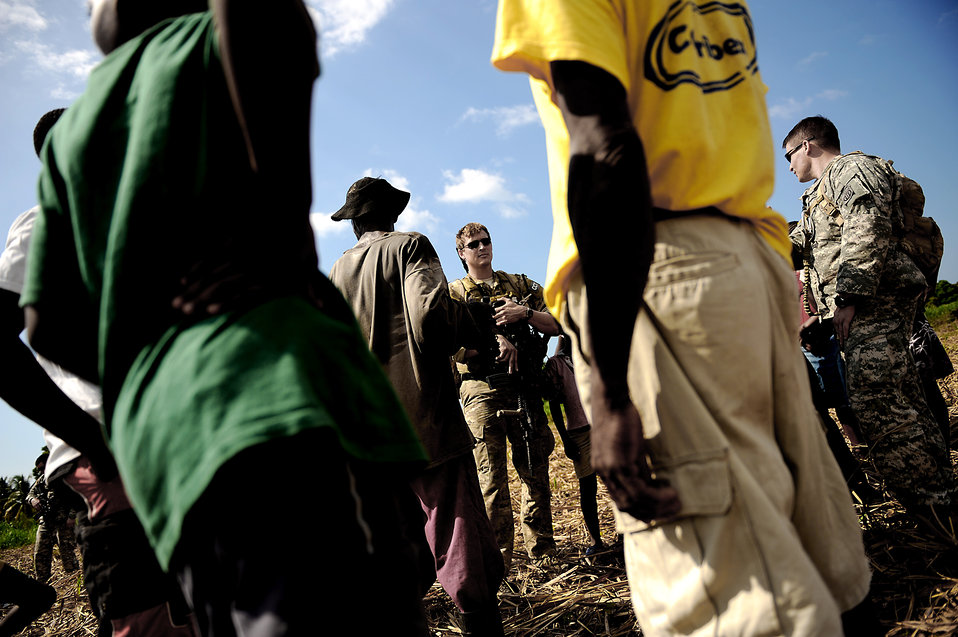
Joint team conducts drop zone survey

U.S. Air Force combat controllers and U.S. Army pathfinders talk with a group of people near an area being surveyed as a drop zone outside Port-au-Prince, Haiti, Jan. 24, 2010, during Operation Unified Response.